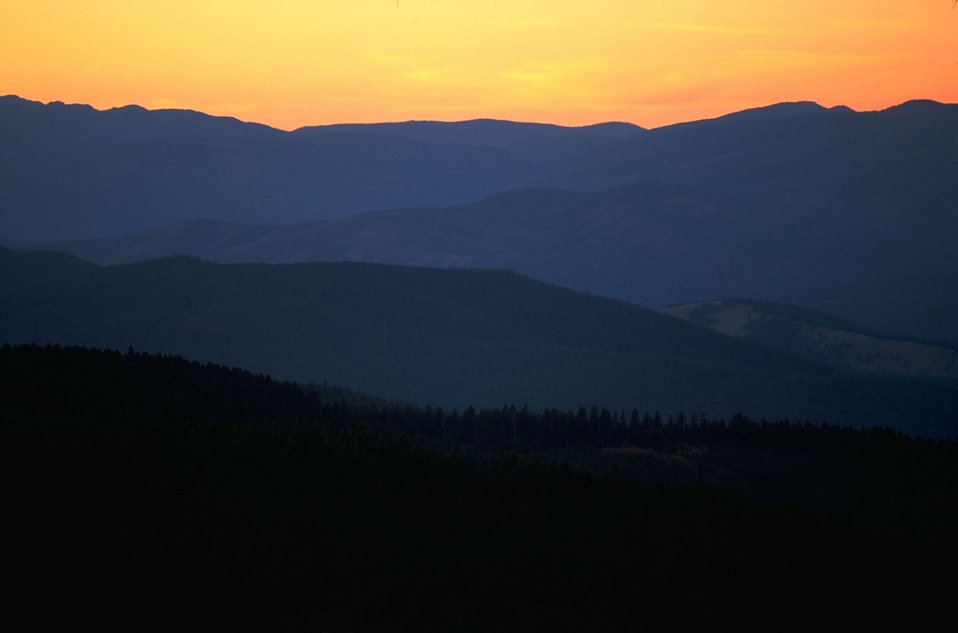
Garnet Back Country Byway--sunrise view from overlook